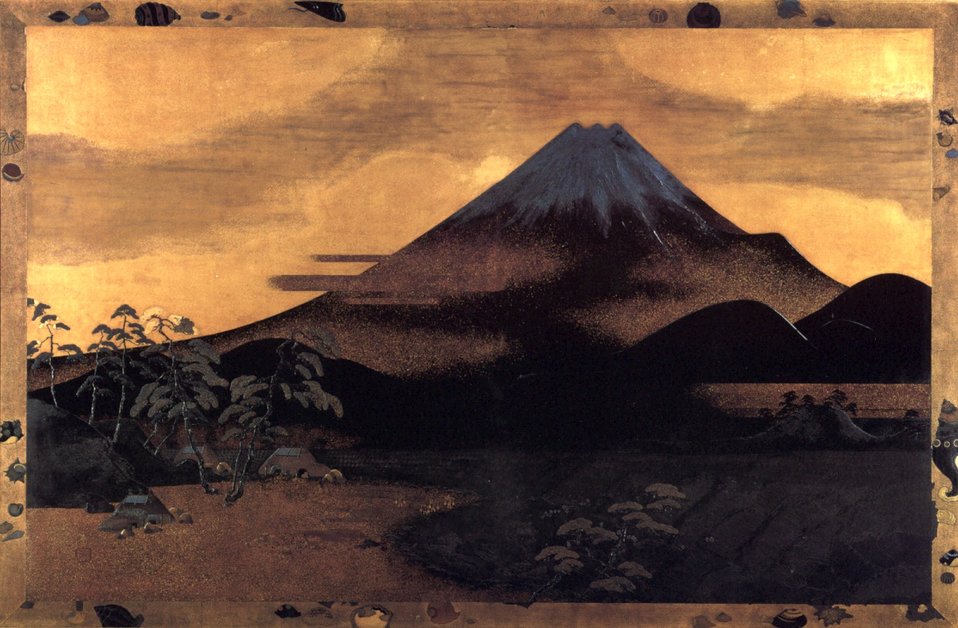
Fuji Tagonoura, maki-e (lacquer) picture by Shibata Zeshin, 1872,